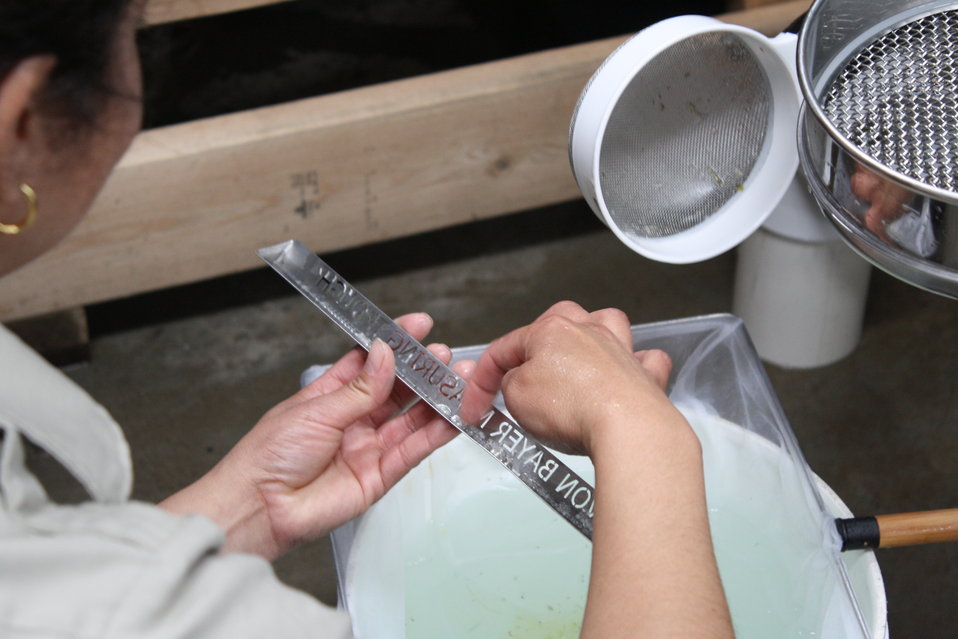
Nashua National Fish Hatchery welcomes regional office employees

Counting shad eggs.